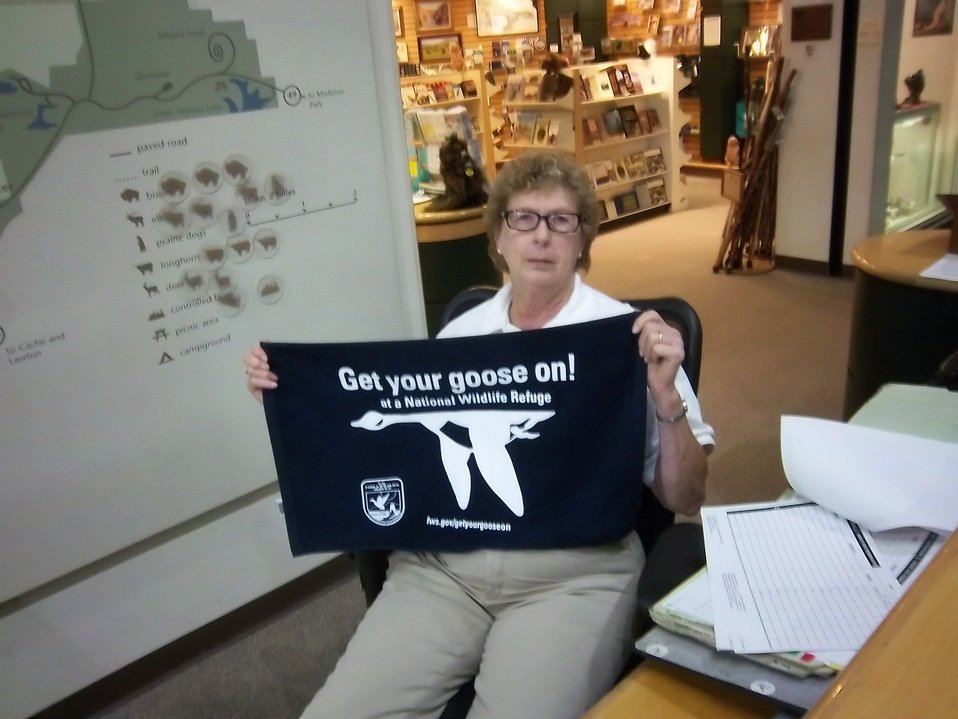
Get Your Goose On!

Wichita Mountains National Wildlife Refuge in Oklahoma.